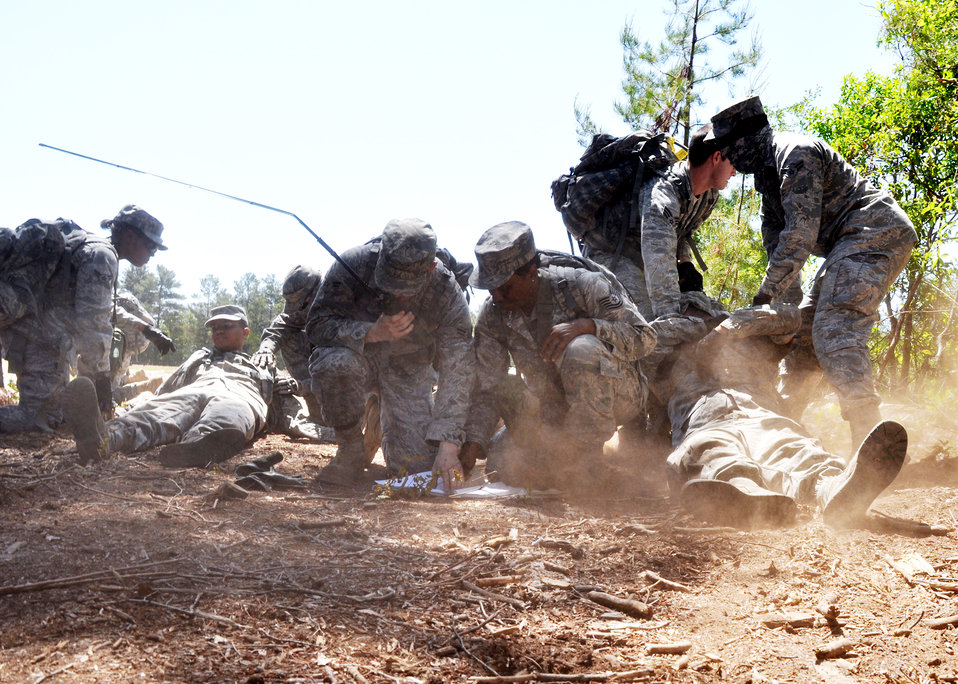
Brave Defenders training

Airmen recover after encountering their first improvised explosive device during the counter-IED portion of Brave Defender training April 22, 2010, at Eglin Air Force Base, Fla. The Airmen are from the 316th Security Forces Squadron at Joint Base Andrews, Md.